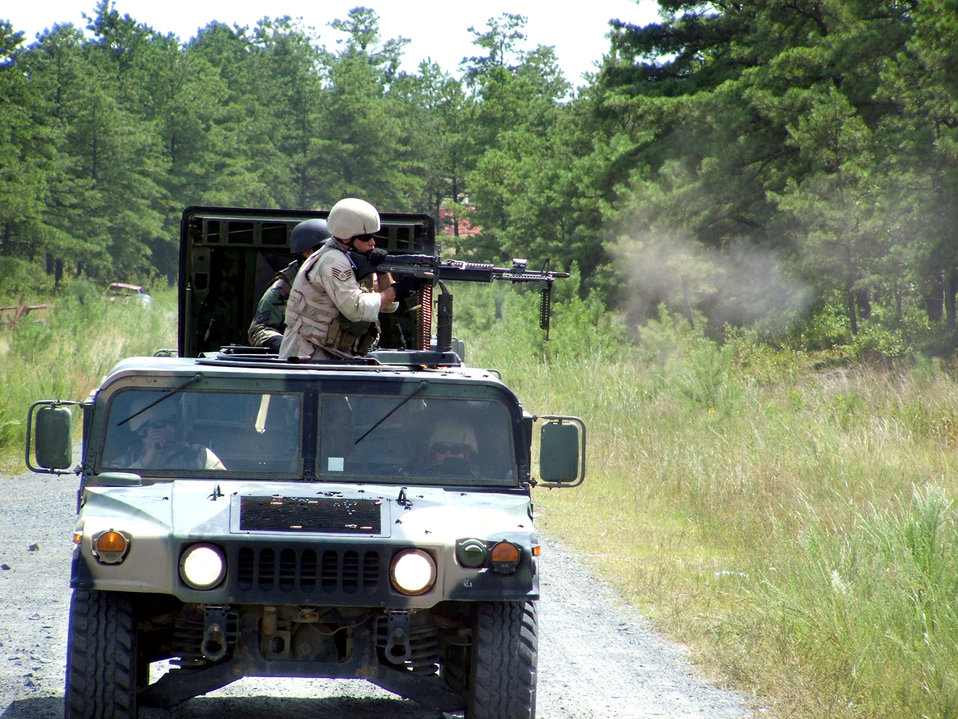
Phoenix Warrior prepares security forces

A security forces Airman fires an M-60 machine gun during live fire shooting and convoy operations training Aug. 8 for the Air Force Phoenix Warrior 06-1 course at Fort Dix, N.J. The course prepares security forces for their next air expeditionary force rotational deployment.